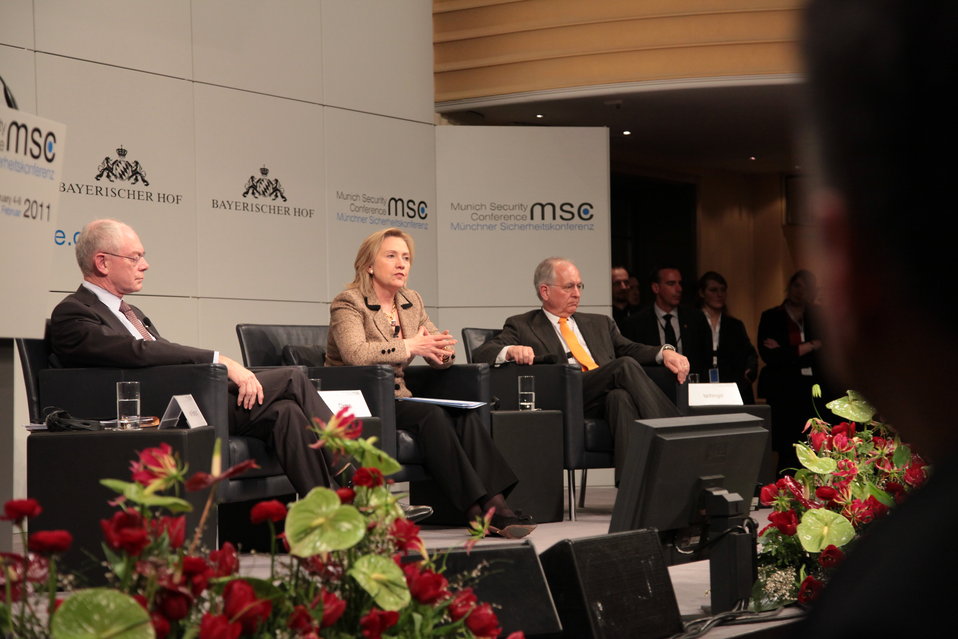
Secretary Clinton Responds to Questions

U.S. Secretary of State Hillary Rodham Clinton responds to questions during a Q and A session after delivering remarks at the Munich Security Conference in Munich, Germany, on February 5, 2011. [State Department